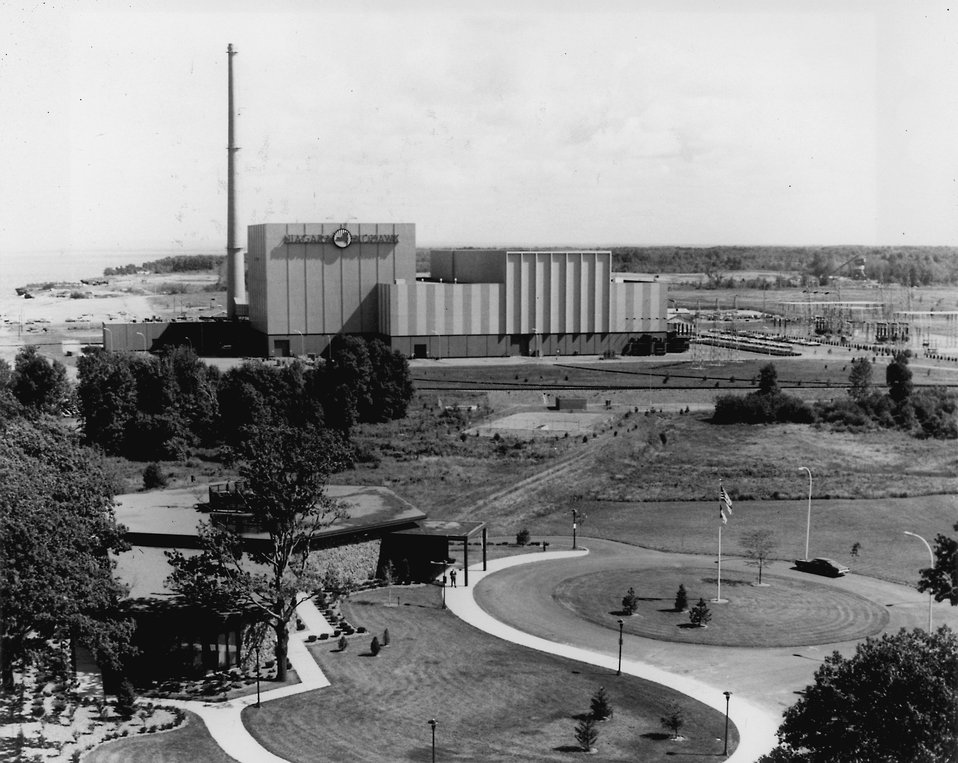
Overall view of Nine Mile Point on Lake Ontario shows Niagara Mohawk Power Corporation's nuclear electric power station, with Progress Information Center in foreground and lake shore in background at left. Circa 1969.